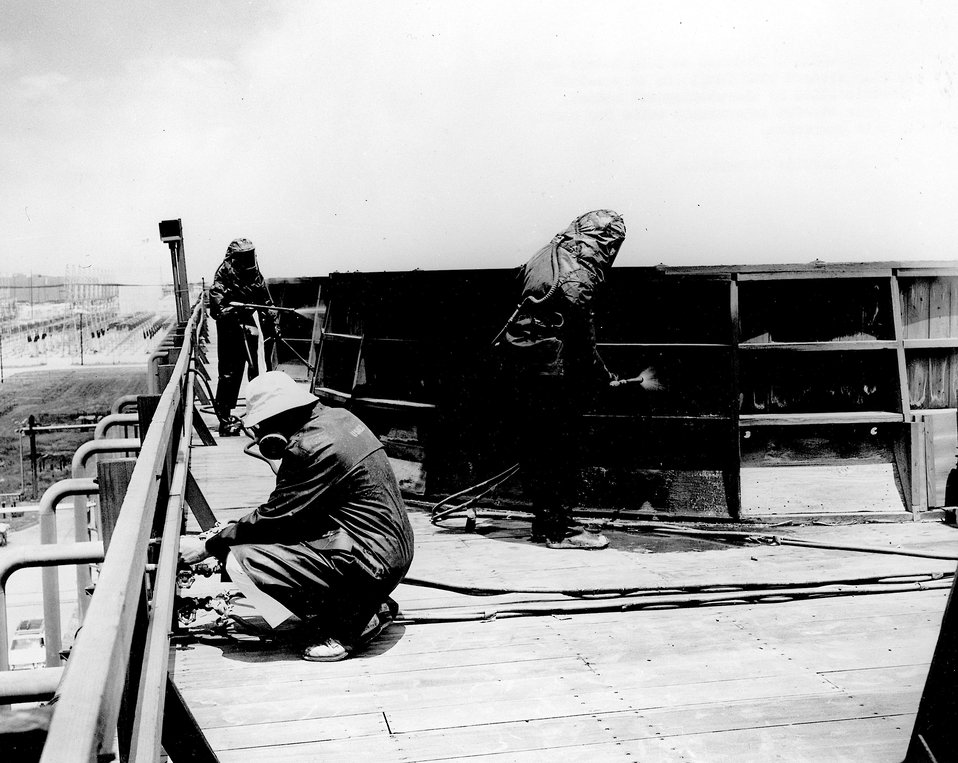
Redwood cooling towers are periodically sprayed with fungicide to preclude wood deterioration by microbiological attack. Circa 1967.